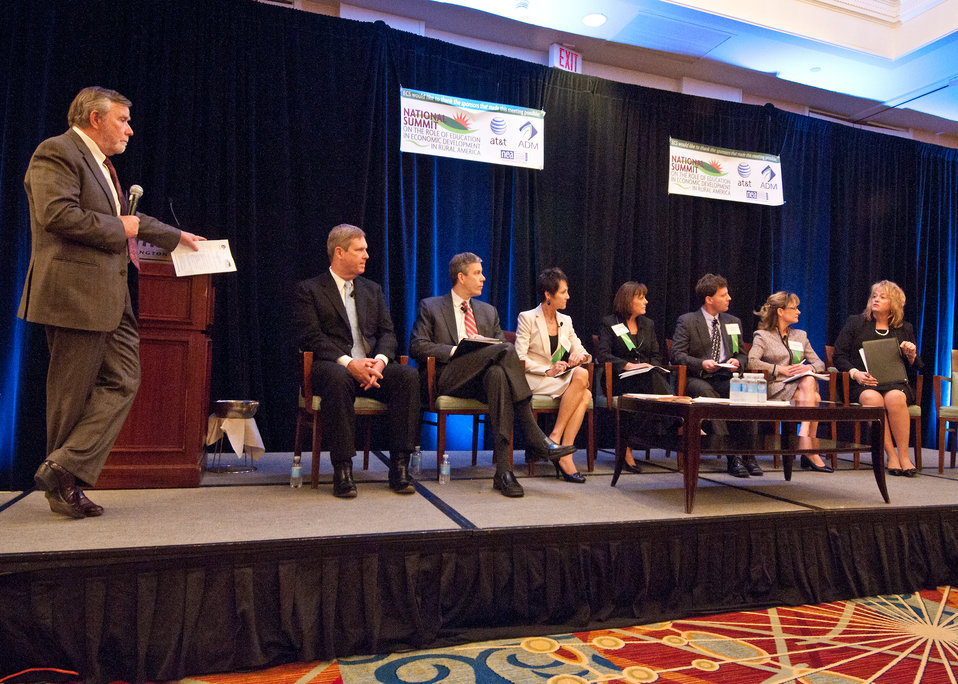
Rae Ann Kelsch, Chair of the House Education Committee, North Dakota responds to remarks by Agriculture Secretary Tom Vilsack and Education Secretary Arne Duncan at the First National Summit on Rural Education and Economic Development held by the Education Commission of the States in Washington, DC, on Wednesday, May 4, 2011. From left: David Longanecker, President, Western Interstate Commission for Higher Education, Colorado, Agriculture Secretary Tom Vilsack and Education Secretary Arne Duncan, Melody Schopp, Secretary of Education, South Dakota Department of Education, Diane DeBacker, Commissioner of Education, Kansas Department of Education, Senator Cooper Garnos, Majority Whip and Chair of the Senate Education Committee, Stephanie Tyler, President, AT&T Nevada (a sponsor of the Education Summit), Rae Ann Kelsch, Chair of the House Education Committee, North Dakota House of Representatives. Longanecker moderated the summit for ECS. The ECS created by Congress in 1965 includes a range of education policy makers who convene and share education information to build and implement effective education policy.